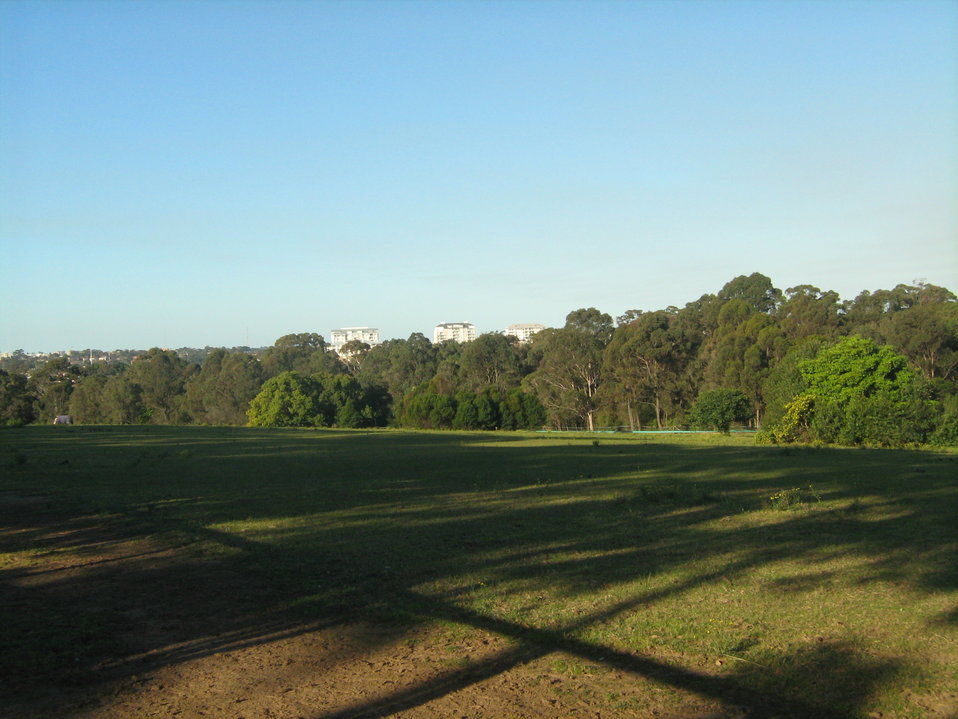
Fields on the southern part of the Yaralla Estate with Sydney Turpentine-Ironbark forest in the background, Concord West, NSW.